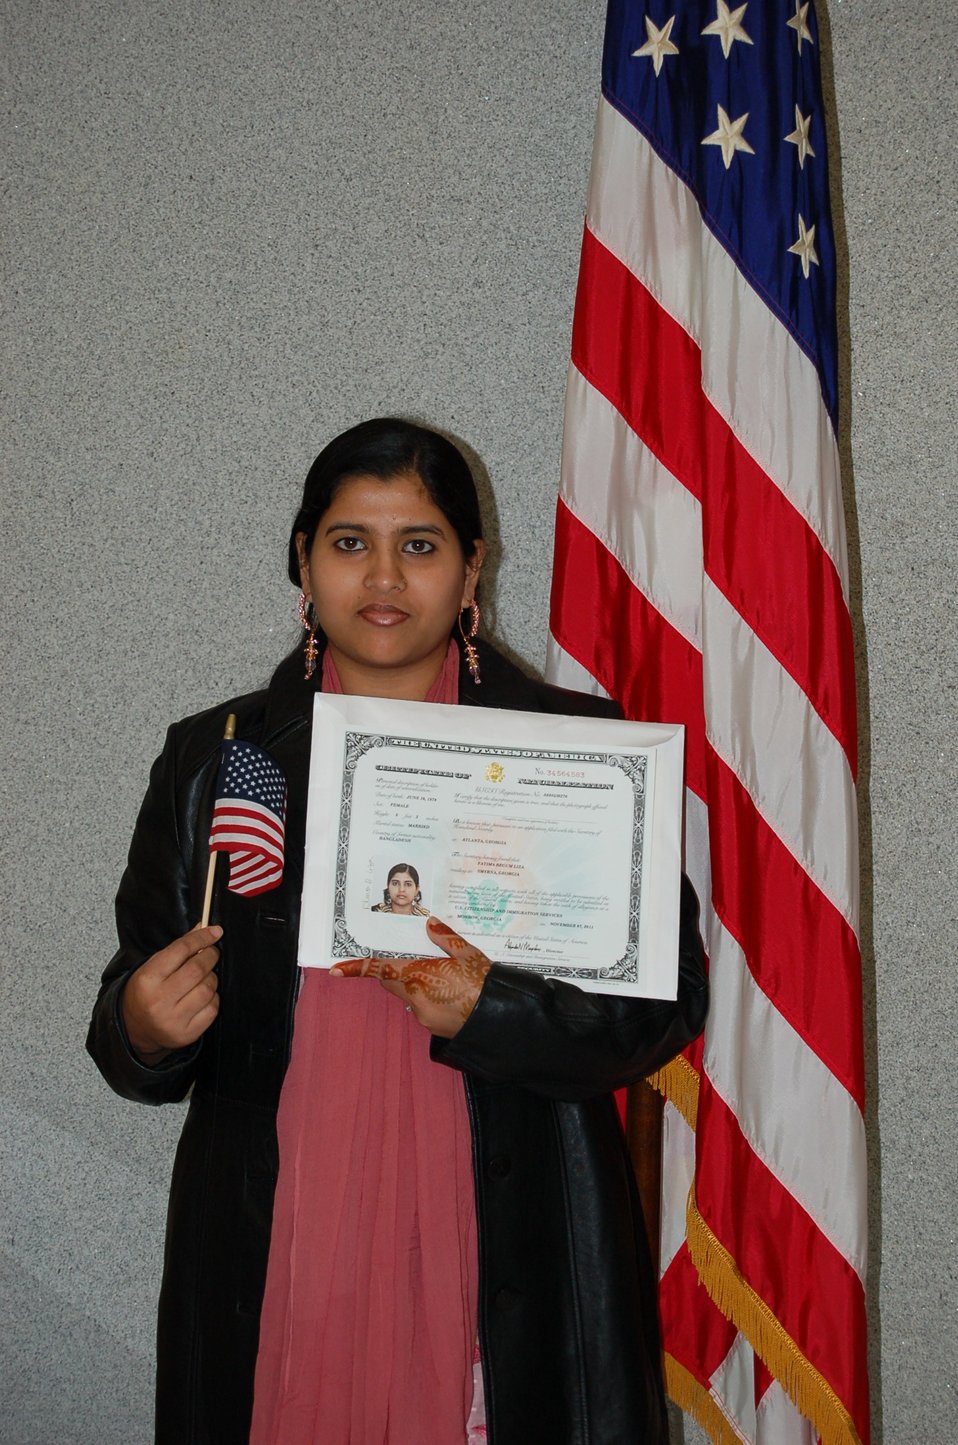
New Citizens